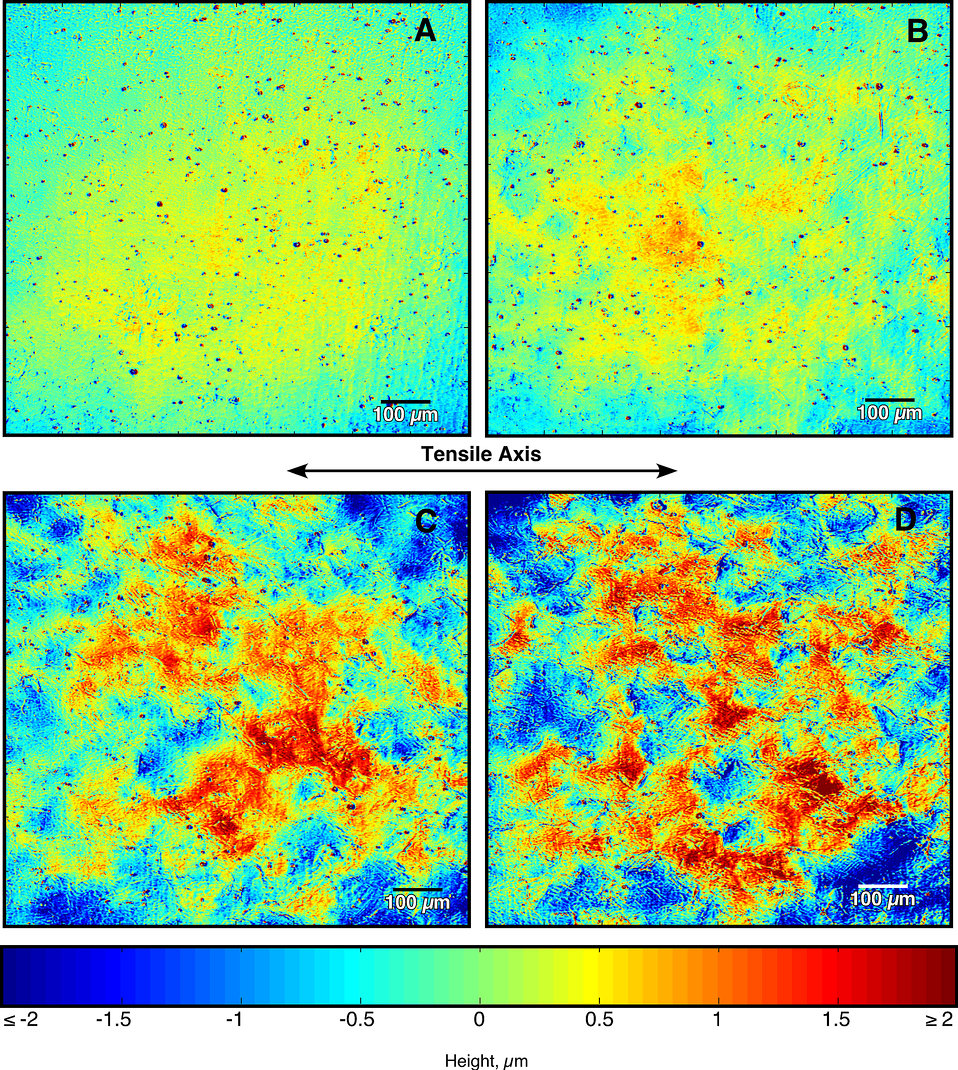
Surface Profiling; Scanning Laser Confocal Microscopy

The four images (taken with scanning laser confocal microscopy) show variations in surface roughness of an aluminum alloy as produced by increasing amounts of strain: A - 1 percent, B - 4 percent, C - 8 percent, and D - 12 percent.